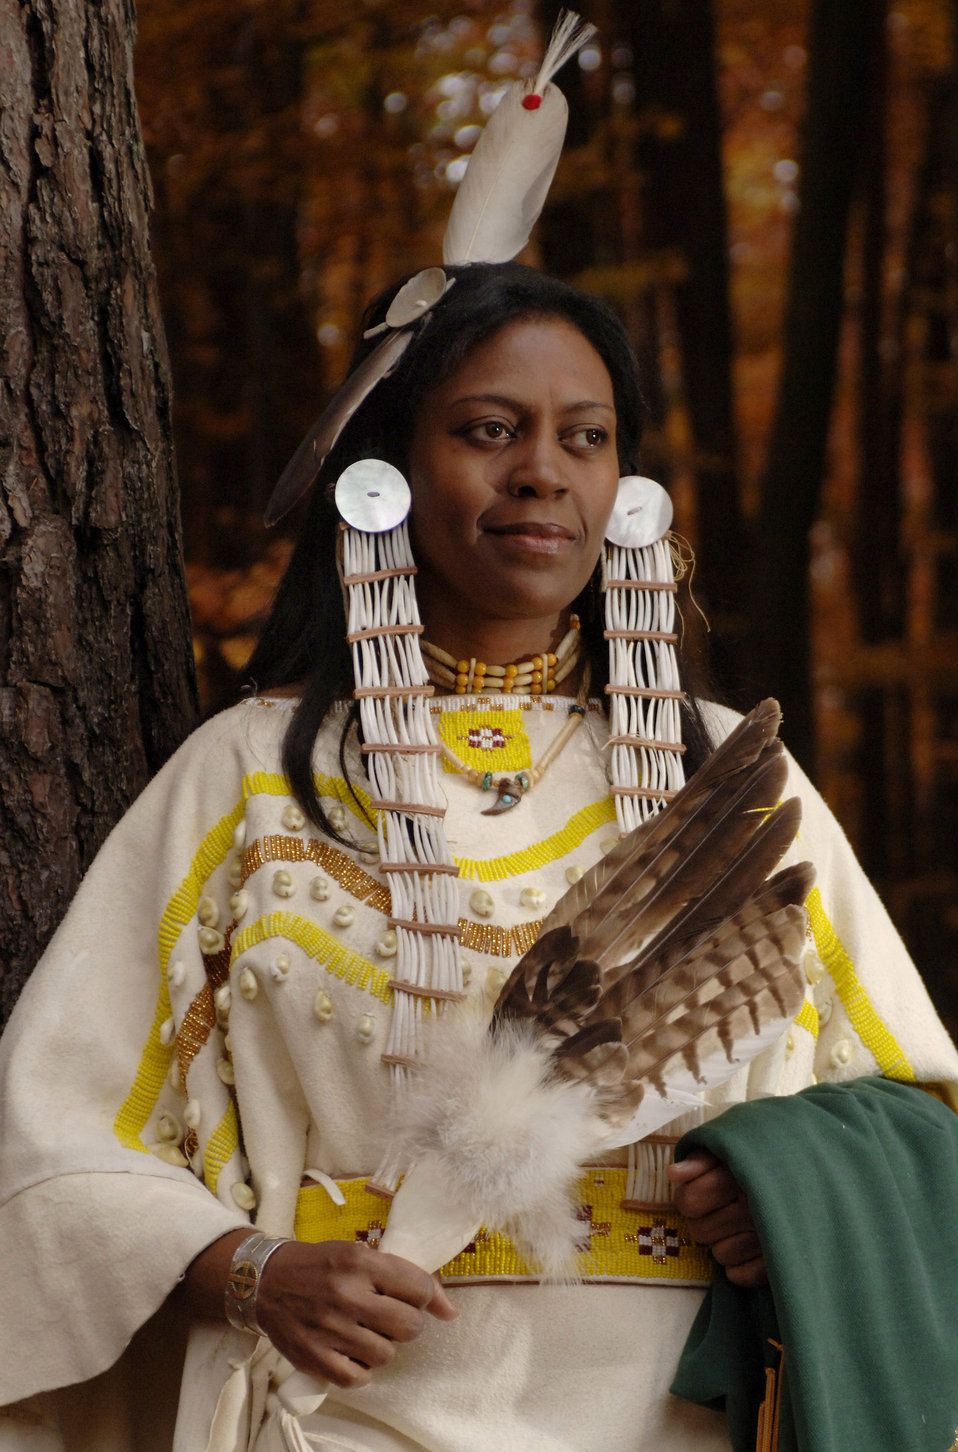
Preserving, remembering the Siksika Nation

Andrea Laboy spent seven months creating the traditional buckskin regalia of her tribe, the Siksika Nation. Ms. Laboy is with the 435th Mission Support Squadron at Ramstein Air Base, Germany.